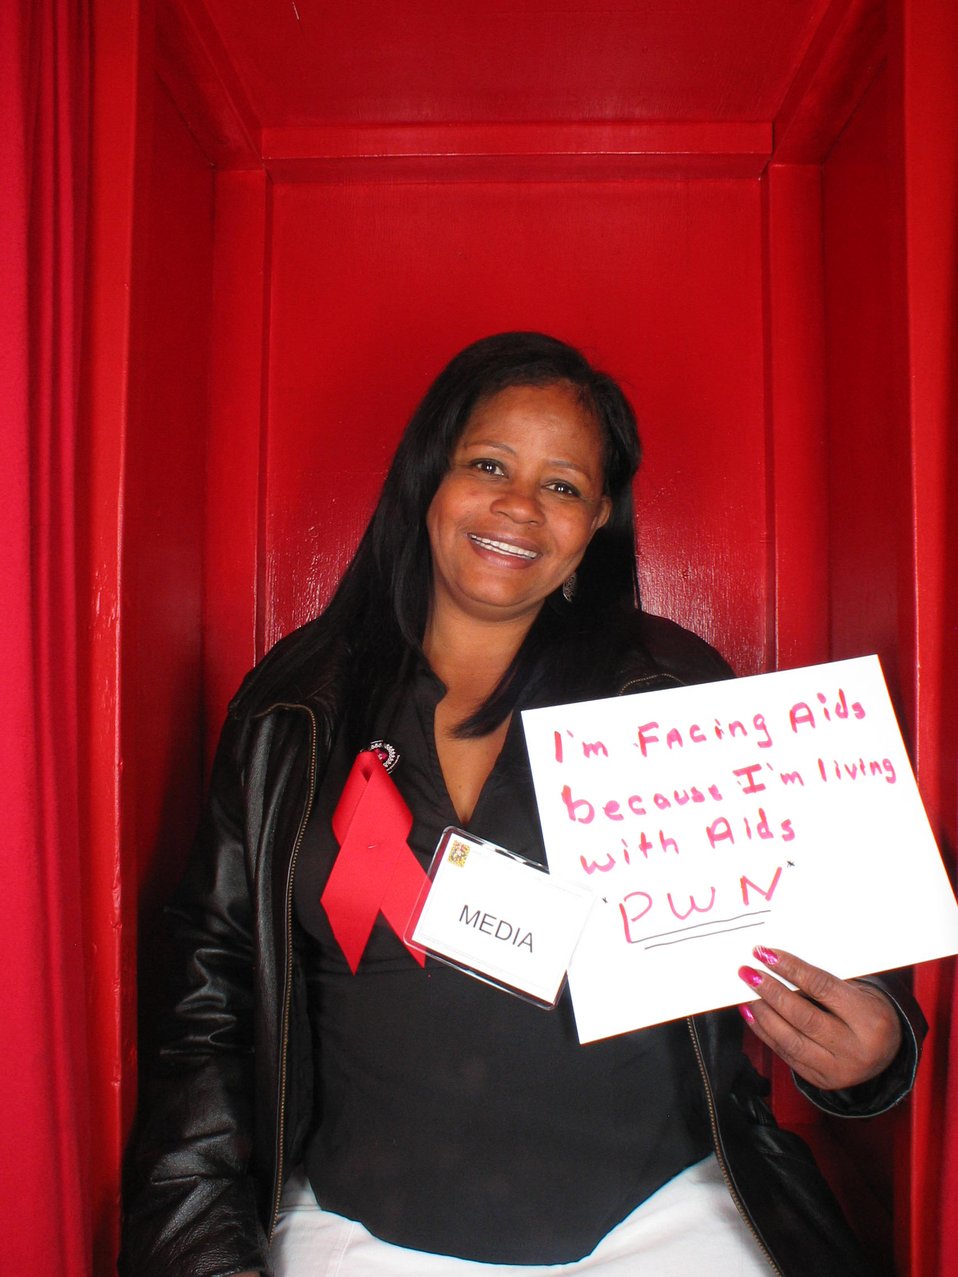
I'm Facing AIDS because I'm living with AIDS. 'PWN'